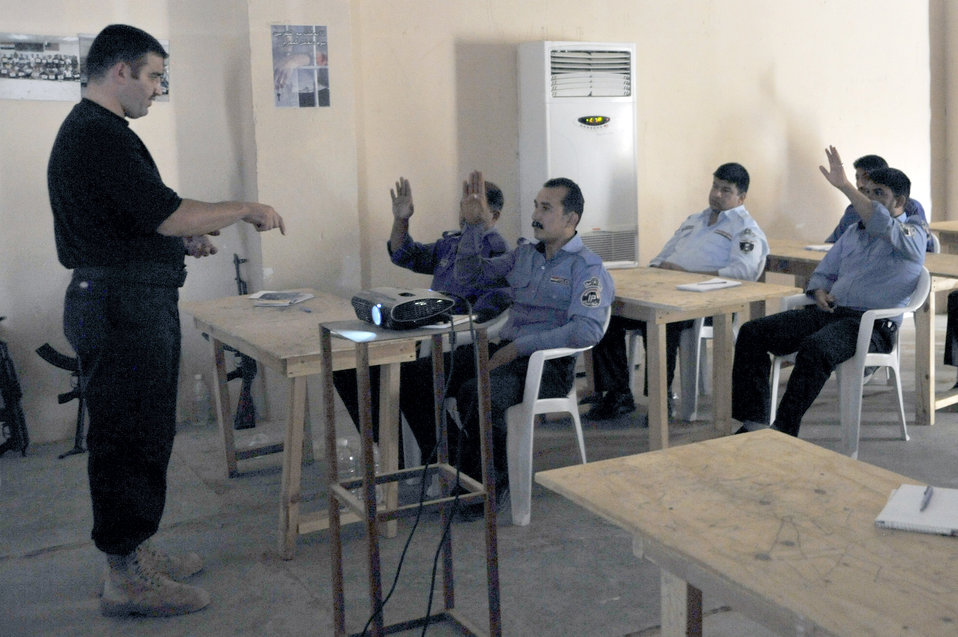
Taji Law Enforcement Academy

Lt. Ahed teaches Iraqi police academy students about the importance of gathering evidence in a crime scene, June 2, 2010, at Camp Taji, Iraq. This was the final day of class before graduation. The 732nd Expeditionary Security Forces Squadron, Det. 3 Airmen completed their mission of facilitating the academy for the past 10 months. Lieutenant Ahed is an Iraq Ministry of Interior instructor.